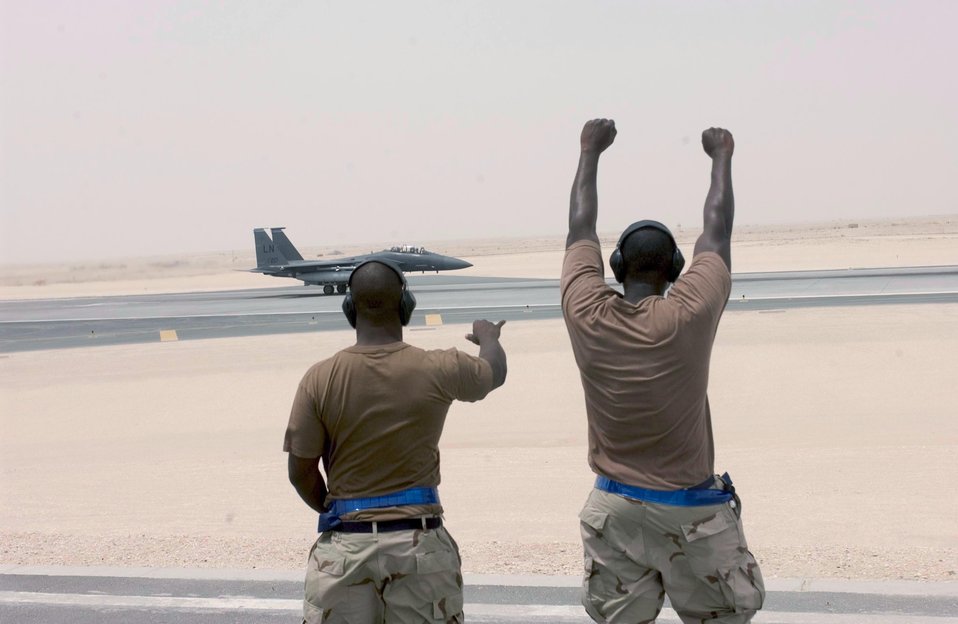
A final look

SOUTHWEST ASIA -- Airmen 1st Class Larry Sheeley (left) and Ashley Freeman cheer as an F-15E Strike Eagle takes off at a forward-deployed location. Both Airmen are armament specialists assigned to the 379th Expeditionary Aircraft Maintenance Squadron. They are deployed from Royal Air Force Lakenheath, England.